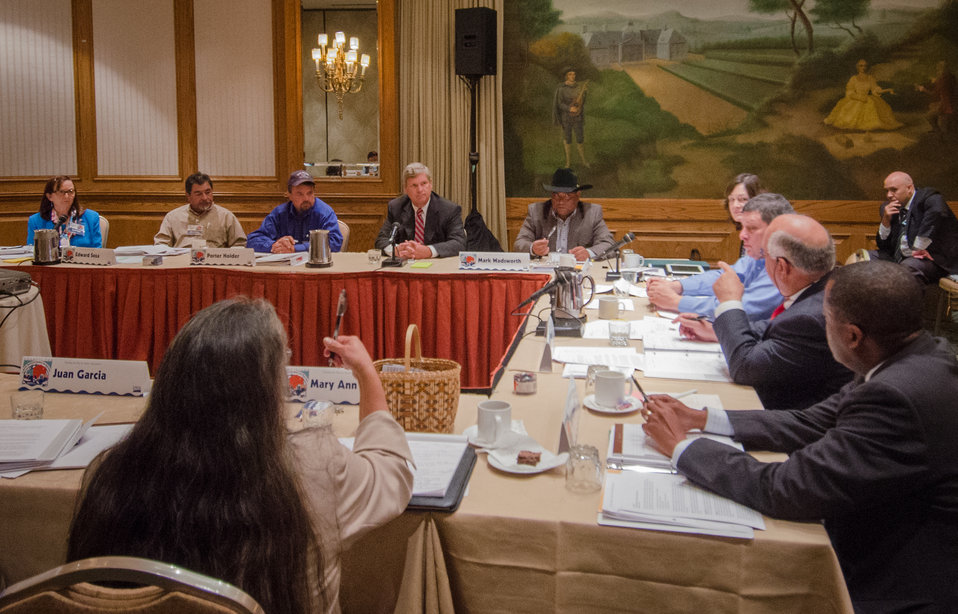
Agriculture Secretary Tom Vilsack, far table, fourth from left, at the U.S. Department of Agriculture's (USDA) Council for Native American Farming and Ranching (CNAFR) members, on Monday, Sep. 9, 2013 at the L'Enfant Plaza Hotel, in Washington, D.C. CNAFR was created to advise the Secretary on ways to eliminate barriers to participation for Native American Farmers and Ranchers in USDA programs. The Council was established as part of the Keepseagle settlement, and is conducted under the oversight of USDA's Office of Tribal Relations, which is part of the Office of the Secretary of Agriculture. Also in attendance is The Director of Tribal Relations Leslie Wheelock, Agriculture Assistant Secretary for Civil Rights Joe Leonard, Jr. Ph.D., Farm Services Administration Administrator Juan M. Garcia and Deputy Administrator for Farm Loans Programs Chris Beyerhelm.